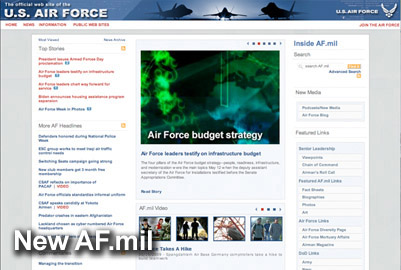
New AF.mil launches

Air Force officials launched a re-designed official Web site, AF.mil. The redesigned site features a larger layout, larger photos, new technology and less clutter. It offers users new content types with the inclusion of slideshows, new video capability, blog-like commenting on content and improved search capability